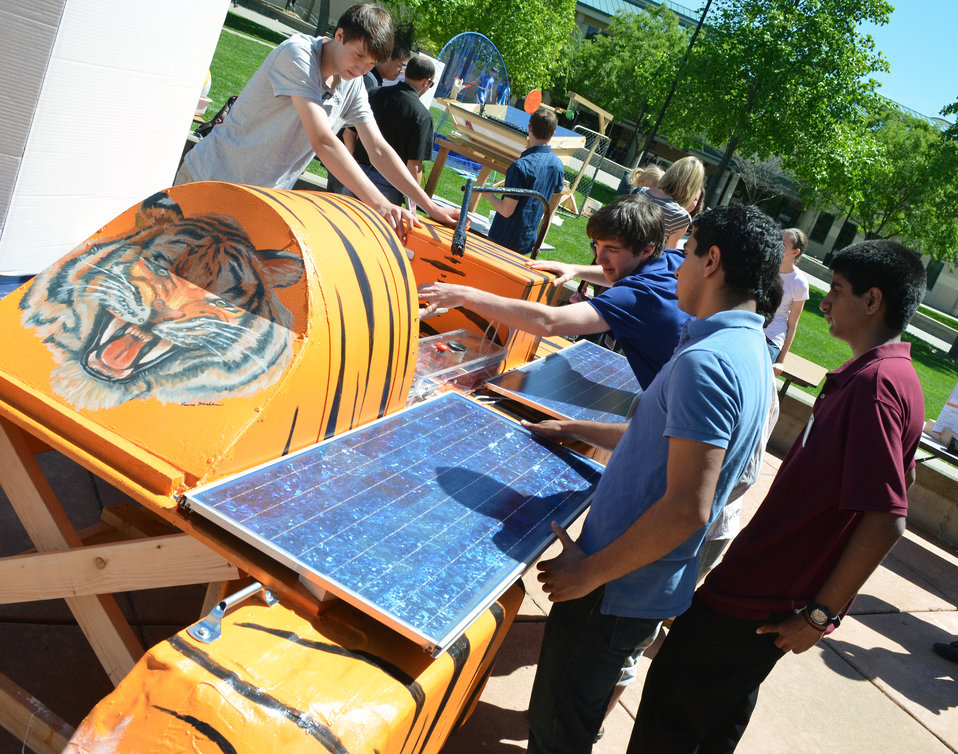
Solar power boat

Folsom High School science students exhibit their solar-powered powerboat during the sixth annual Folsom High School Engineering Challenge in Folsom, Calif., April 19, 2013. A half dozen personnel from the U.S. Army Corps of Engineers Sacramento District took part as judges for the event that promotes careers in science, technology, engineering and math. Photo cropped for emphasis.